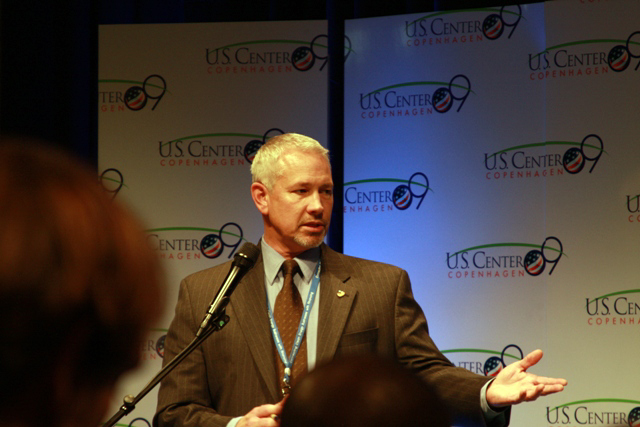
'Development Agenda for Clean Energy and Transfer of Technologies' Presentation at COP-15

Bill Breed, U.S. Agency for International Development participates in a panel presentation on the 'Development Agenda for Clean Energy and Transfer of Technologies' at the U.S. Center during COP15 (Conference of the Parties to the UN Framework Convention on Climate Change) in Copenhagen, Denmark December 10, 2009.